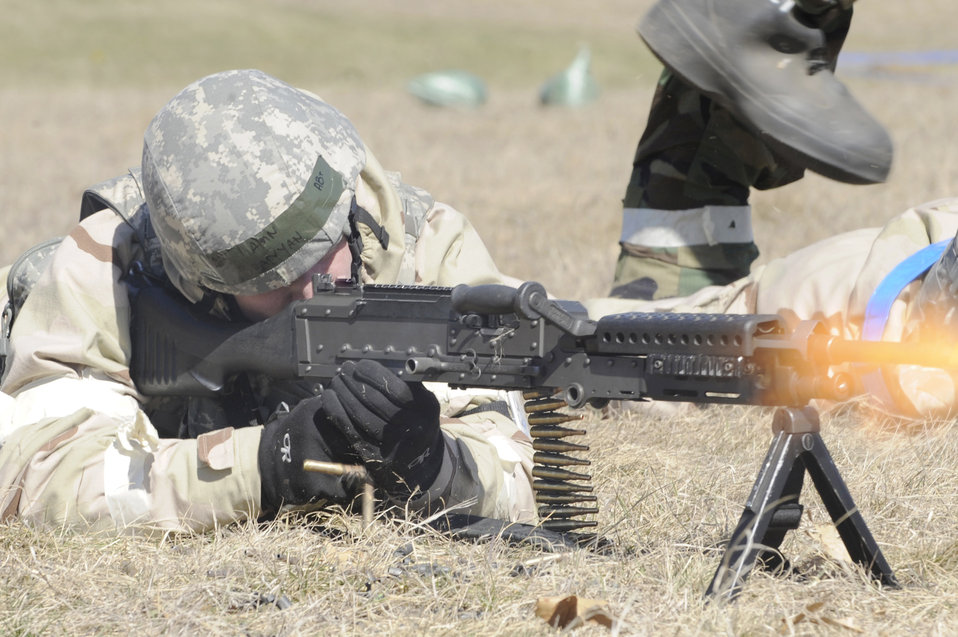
Burst of power

Airman Timothy Branyan test fires his M-240B machine gun at Volk Field, Wis., March 25, 2010, as part of a Wisconsin's Air National Guard operational readiness inspection. Airman Branyan is an installation entry controller with the 375th Security Forces Squadron.